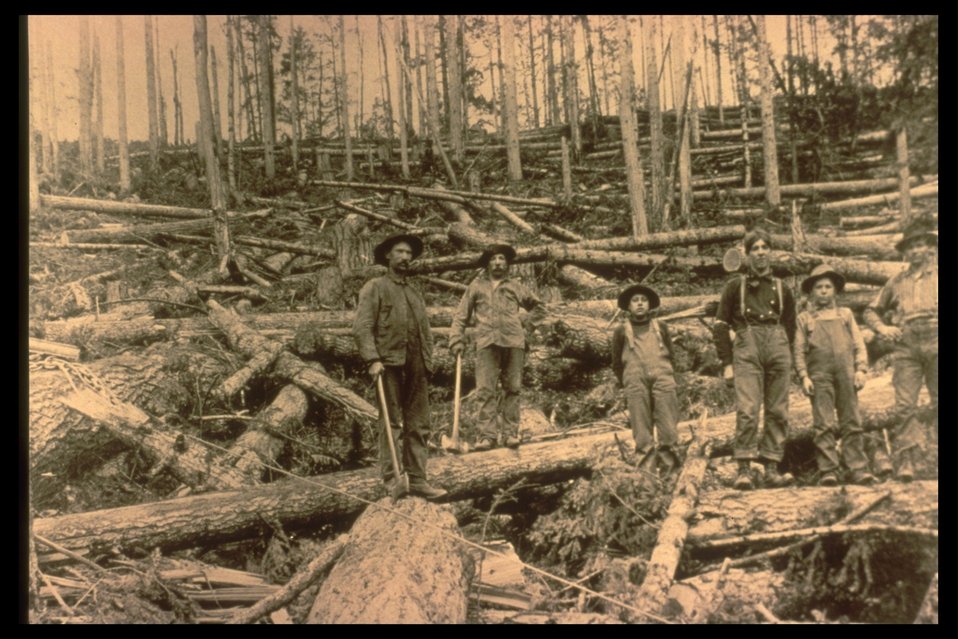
Black and white photo of loggers with axes standing on downed timber.